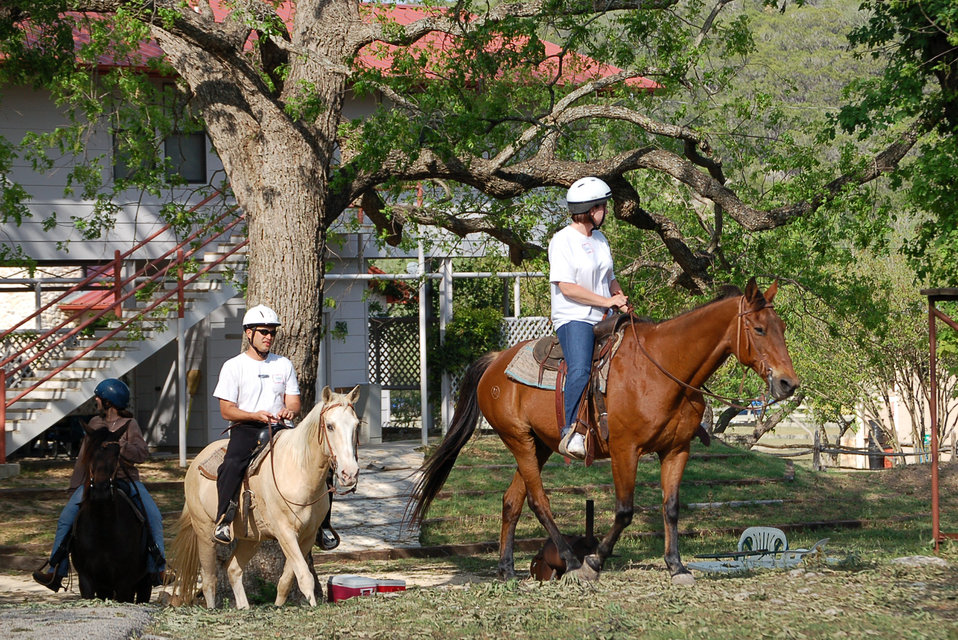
Retreat reconnects couples

A military couple heads back to the stable after an afternoon of horseback riding during a retreat at the Heart of the Hills Camp in Hunt, Texas, on Saturday, April 22, 2006. The retreat , hosted by the Military, Veteran and Family Assistance Foundation, helps couples reconnect after the military spouse returns from a deployment.